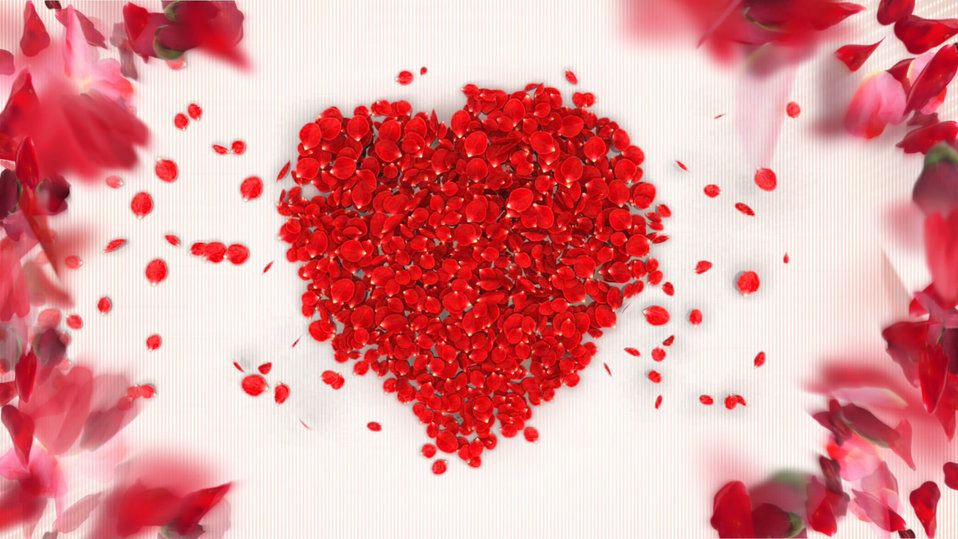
Heart from the petals

Heart of rose petals falling.